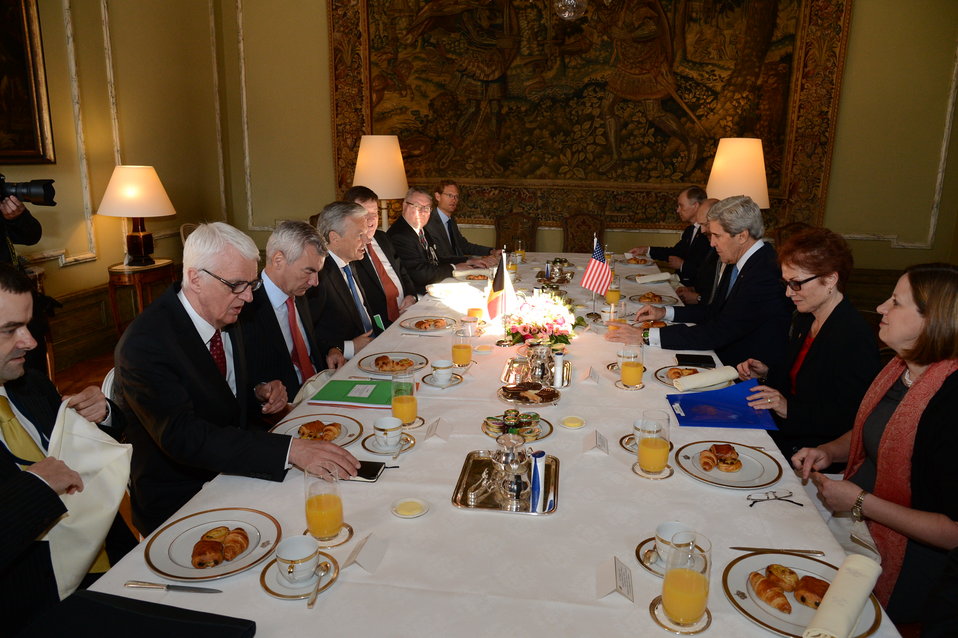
Secretary Kerry Meets With Belgian Foreign Minister Reynders

U.S. Secretary of State John Kerry meets with Belgian Foreign Minister Didier Reynders at Egmont Palace in Brussels, Belgium, on April 24, 2013.